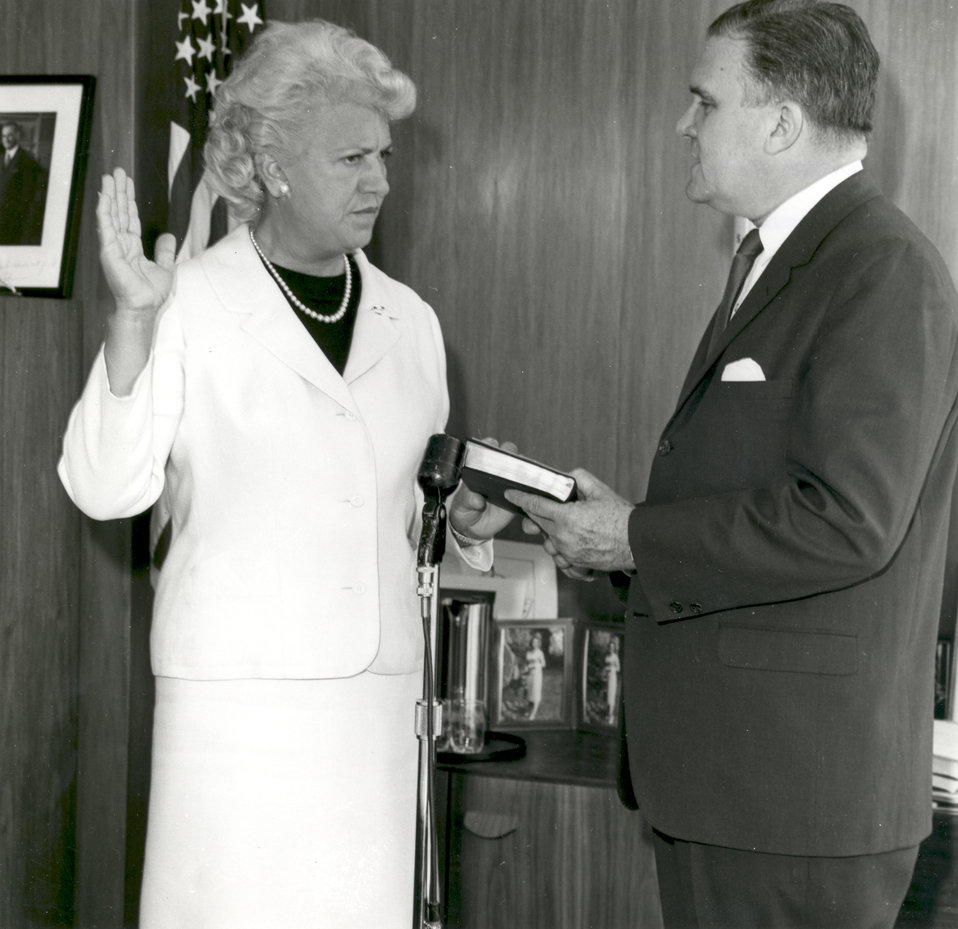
Jacqueline Cochran, first woman aviator to break the sound barrier, is sworn in as a consultant by NASA Administrator James E. Webb in 1961.